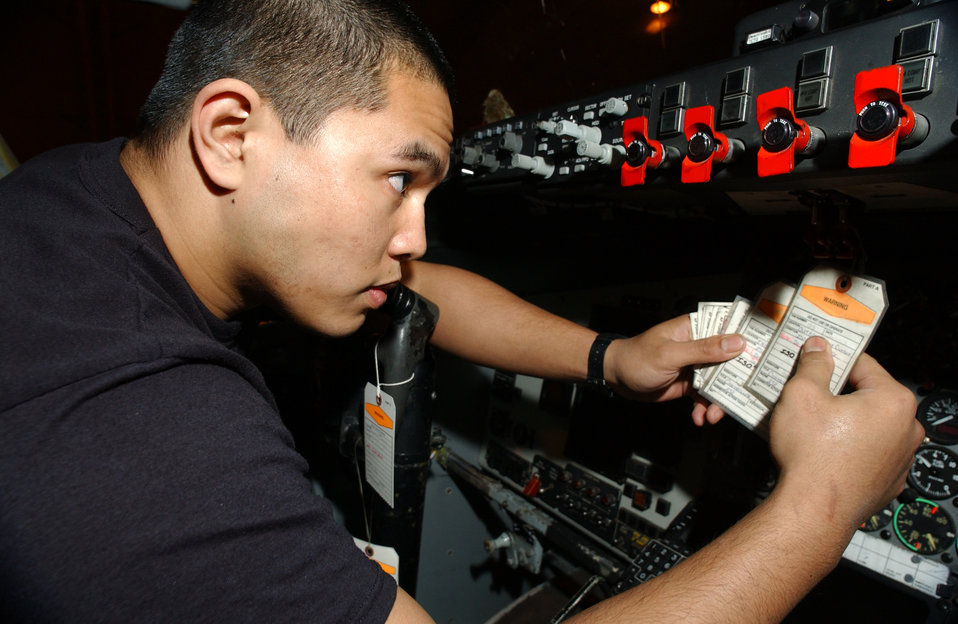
Inspection complete

ROYAL AIR FORCE FAIRFORD, England -- Airman 1st Class Daniel Dela Cruz collects warning tags from a KC-135 Stratotanker to show completion of maintenance here May 19. Airman Cruz is a crew chief with the 100th Maintenance Squadron at Royal Air Force Mildenhall, England.